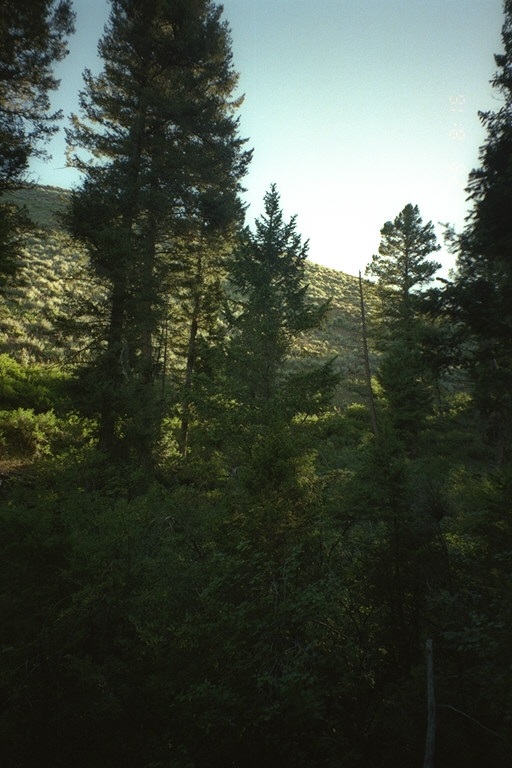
Riparian area Public Lands Salmon Field Office UCSC Upper Columbia Salmon Clearwater District